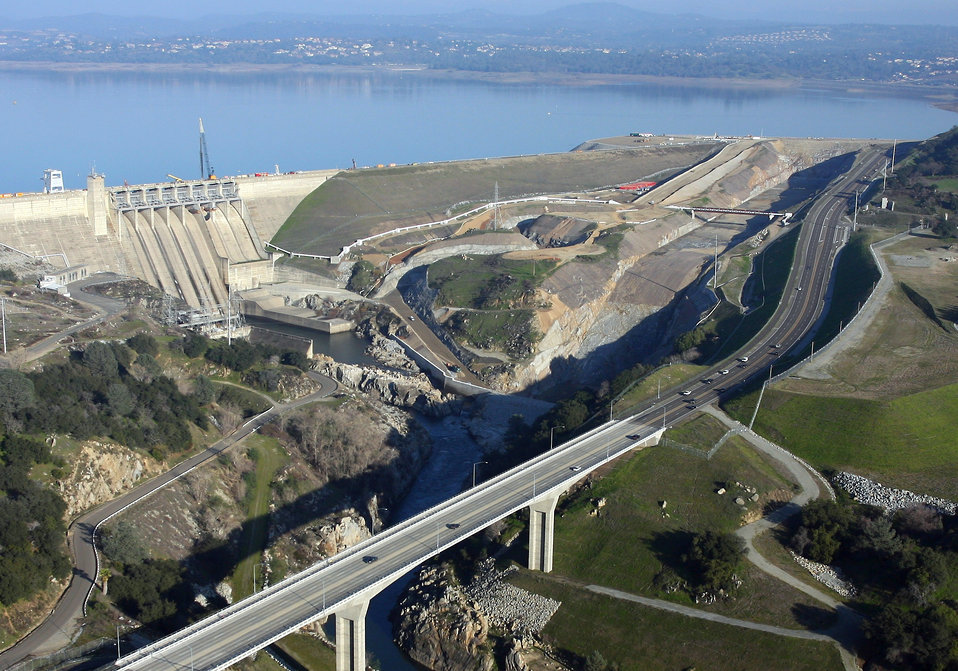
FOLSOM, Calif. – Construction of the Folsom Dam auxiliary spillway continues here Jan. 20, part of the Folsom Dam Joint Federal Project between the U.S. Bureau of Reclamation, the Sacramento Area Flood Control Agency and the U.S. Army Corps of Engineers Sacramento District to reduce flood risk for the Sacramento area. The spillway will allow for slower and safer water releases from Folsom Lake into the American River in high water. The Sacramento District completed the Folsom Lake Crossing Bridge across the river (shown at bottom) in 2009, replacing the road atop the dam closed for security concerns in 2003.